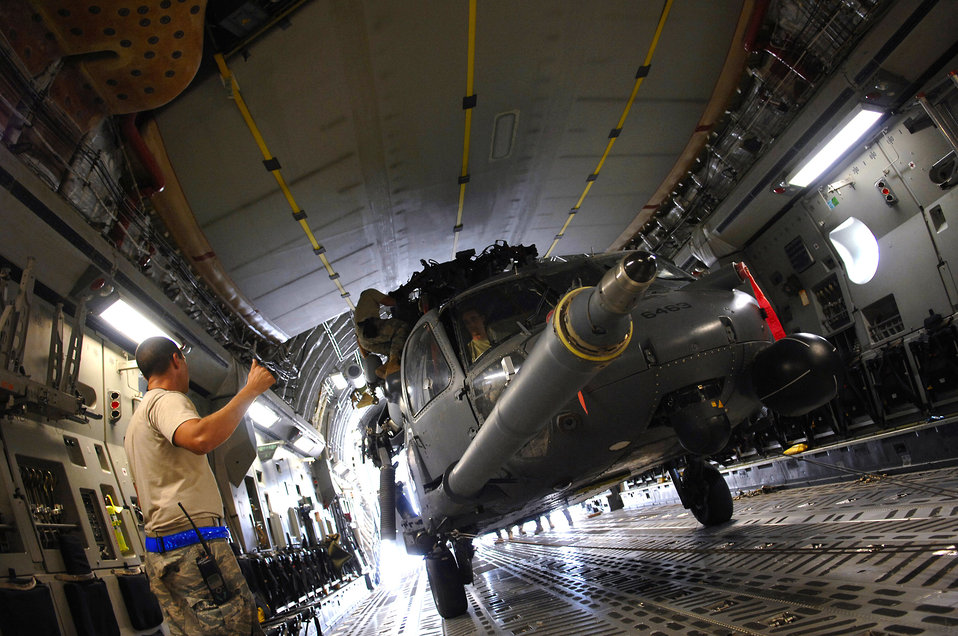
How to put a square peg in a round hole

Tech. Sgt. Joseph Herrera gives a thumbs up to loadmasters during an upload of an HH-60 Pave Hawk into a C-17 Globemaster III July 12 at Joint Base Balad, Iraq. The helicopter is configured in a folded position that allows it to be loaded with enough clearance all around. Sergeant Herrera is a 64th Expeditionary Helicopter Maintenance Unit crew chief deployed from Davis-Monthan Air Force Base, Ariz.